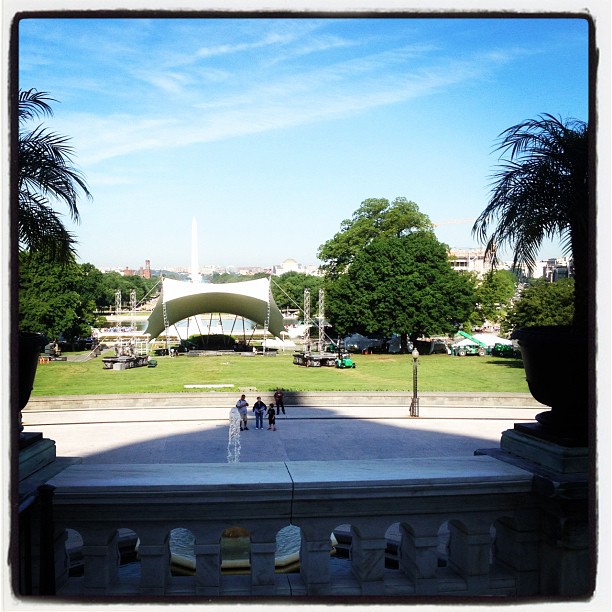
Capitol west lawn hosts Memorial Day Concert, Sunday at 8 pm. Photo: preparations last week. #memdaypbs